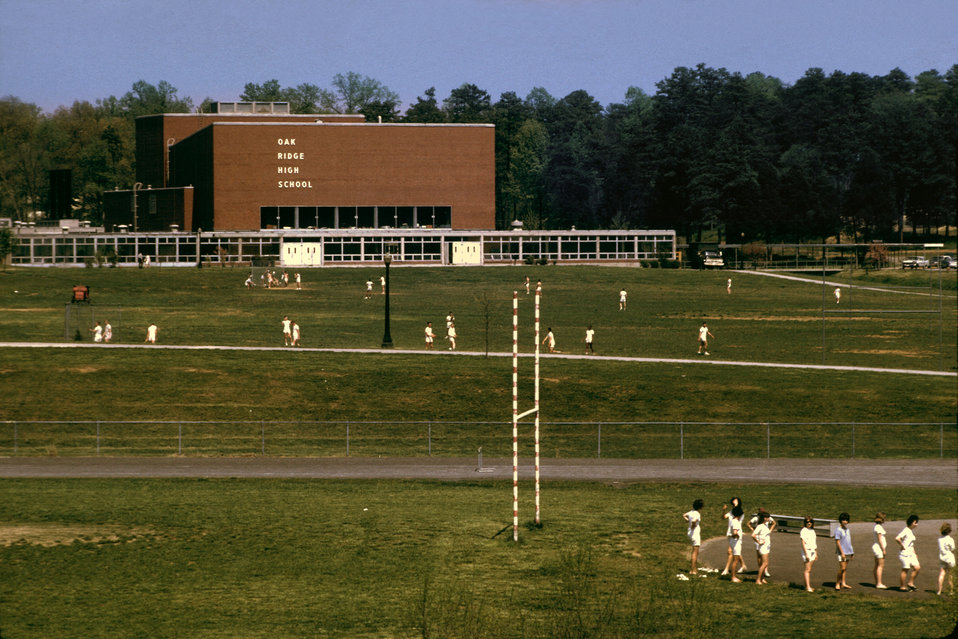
PE Class Oak Ridge High School

DOE photo by Ed Westcott

PE Class Oak Ridge High School Oak Ridge Tennessee April 1965